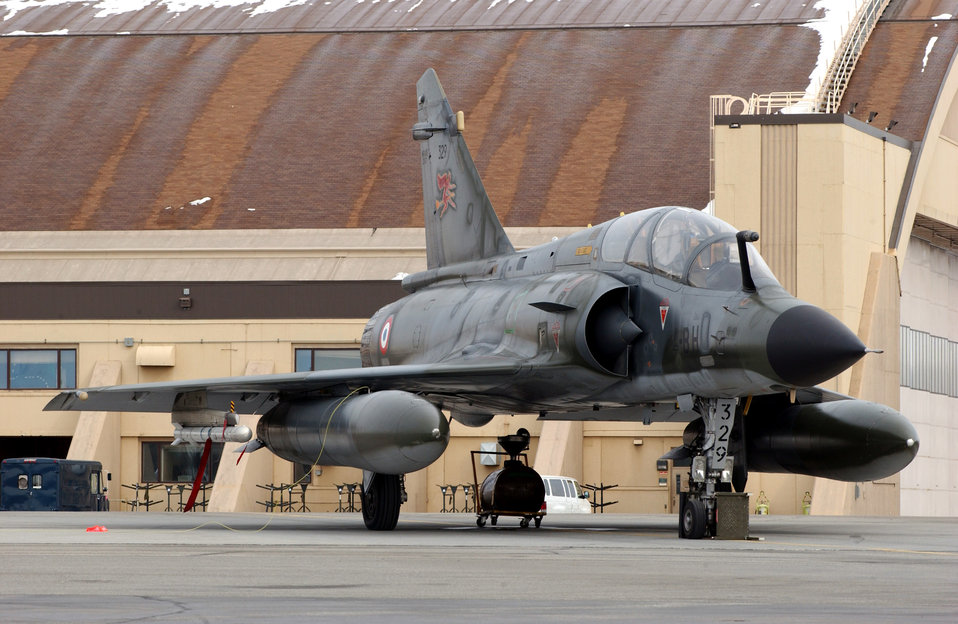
Red Flag forces huddle up at Eielson

A French air force M2000 Mirage sits on the tarmac awaiting a mission for Red Flag-Alaska 07-1 in April at Eielson Air Force Base, Alaska. Red Flag-Alaska is a Pacific Air Forces-directed field training exercise flown under simulated air combat conditions. It is conducted on the Pacific Alaskan Range Complex with air operations flown out of Eielson and Elmendorf Air Force bases.